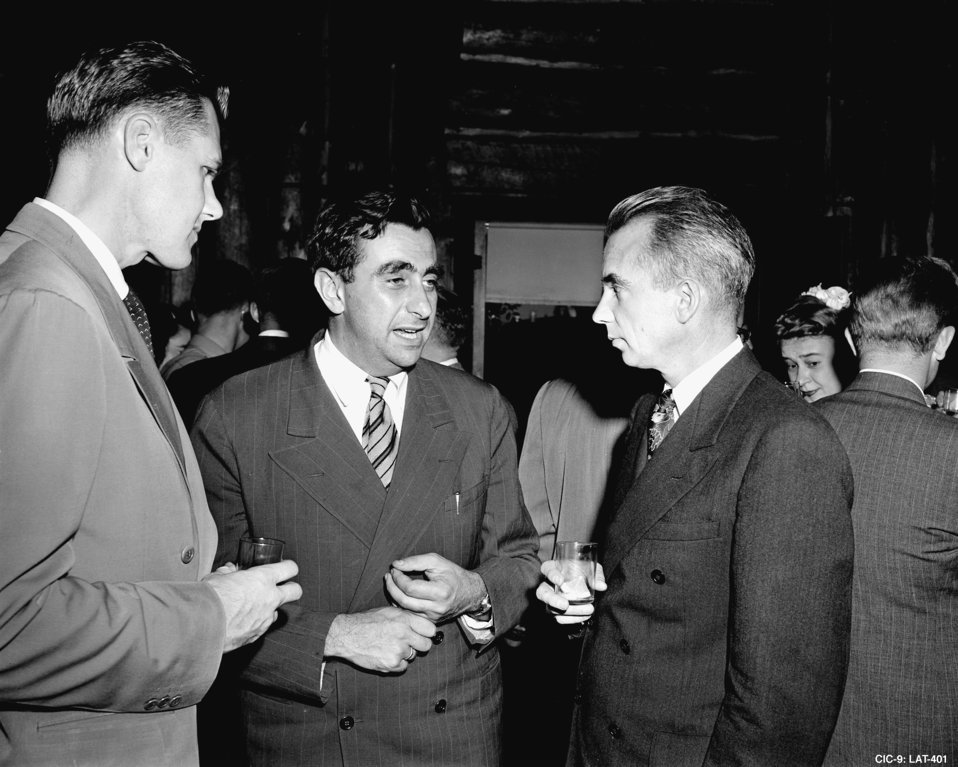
PETERSON, TELLER, BRADBURY